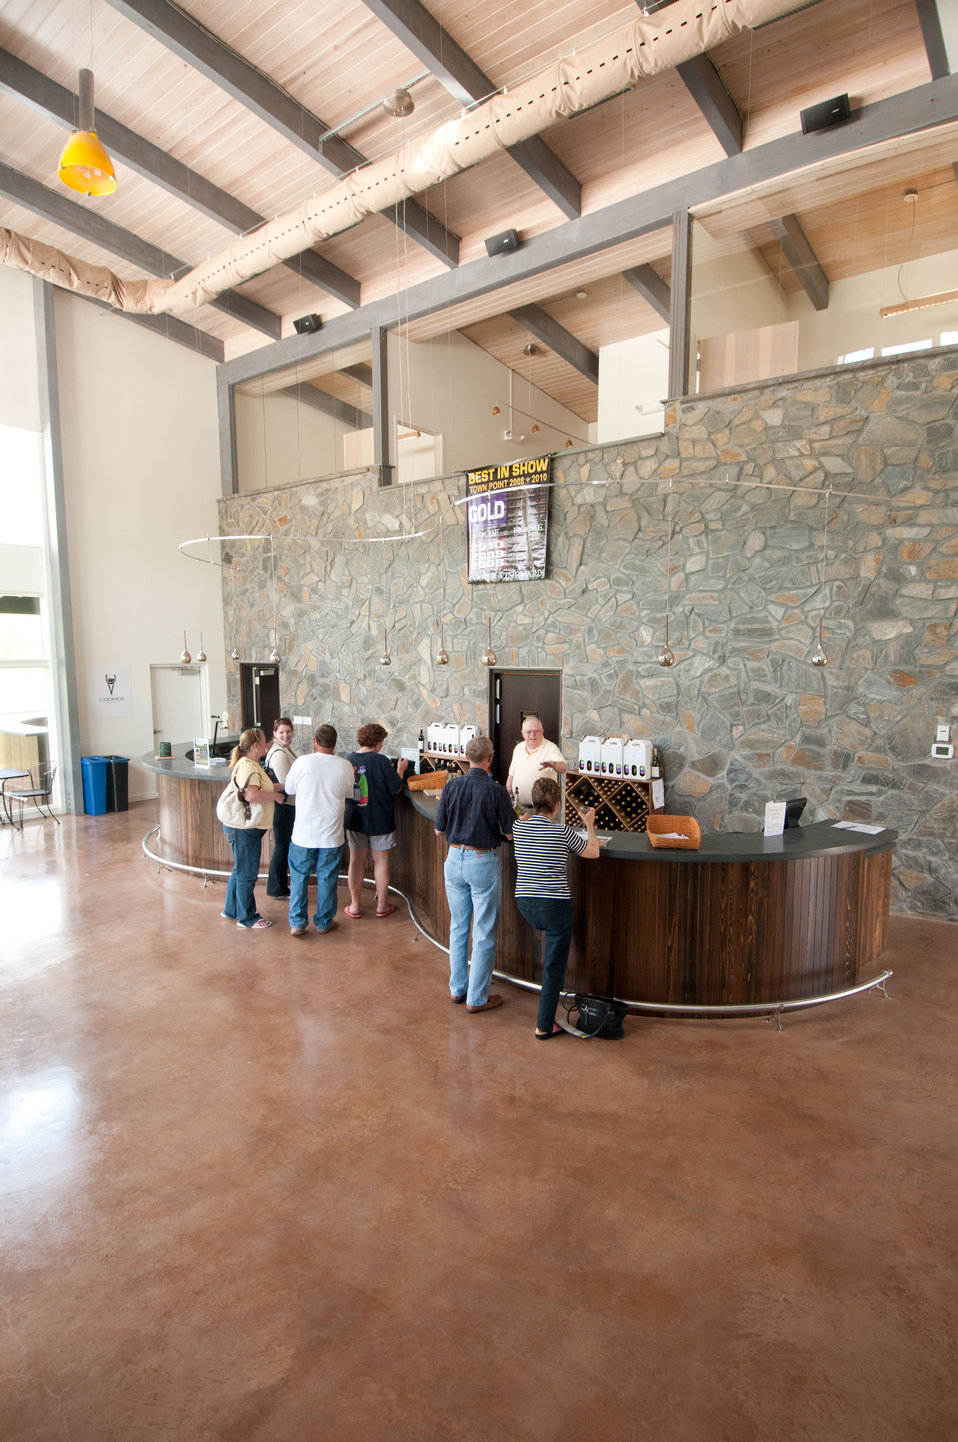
Daniel Powell tends to guests at Cooper Vineyards in Louisa, VA, the first winery on the East Coast and the second in the country to be awarded the fourth and highest, Platinum certification by Leadership in Energy and Environmental Design (LEED).
From a Virginia Wine Board Marketing Office press release, “The process of building a LEED platinum certified building was initially more expensive and arduous than co-owners, Jacque Hogge, MD and Geoffrey Cooper, MD expected, but they were able to get financial assistance from the United States Department of Agriculture. “Know that there are grants available to help with the costs of sustainable building projects,” Hogge advises to other potential green wineries. Cooper Vineyards received 2 of the 3 USDA (U.S. Department of Agriculture Rural Development (RD) Rural Energy Financing program) grants awarded in Virginia in 2010 to help with the expenses of their construction.”
Rural Energy Financing program focuses on loan guarantees, loans and grants to agricultural producers, businesses, cooperatives and rural residents for renewable energy systems and to make energy efficiency improvements.
The tasting room and building collects rainwater from the roof; uses low flow water fixtures to reduce usage by 40%; utilizes structurally insulated panels for the roof and walls; heats and cools the entire building using a geothermal system that includes pipes that are embedded in the parking lot; low-voltage LED lighting with daylight and occupancy sensors provide ample light when it is needed; a solar panel array provides more than 15% of the energy needs for the building, and much of the construction materials are from local and recycled material sources. For more information about USDA please go to www.usda.gov, Rural Development and Rural Energy Financing. LEED was developed by the U.S. Green Building Council (USGBC) is a 501 c3 non-profit organization committed to a prosperous and sustainable future for our nation through cost-efficient and energy-saving green buildings.